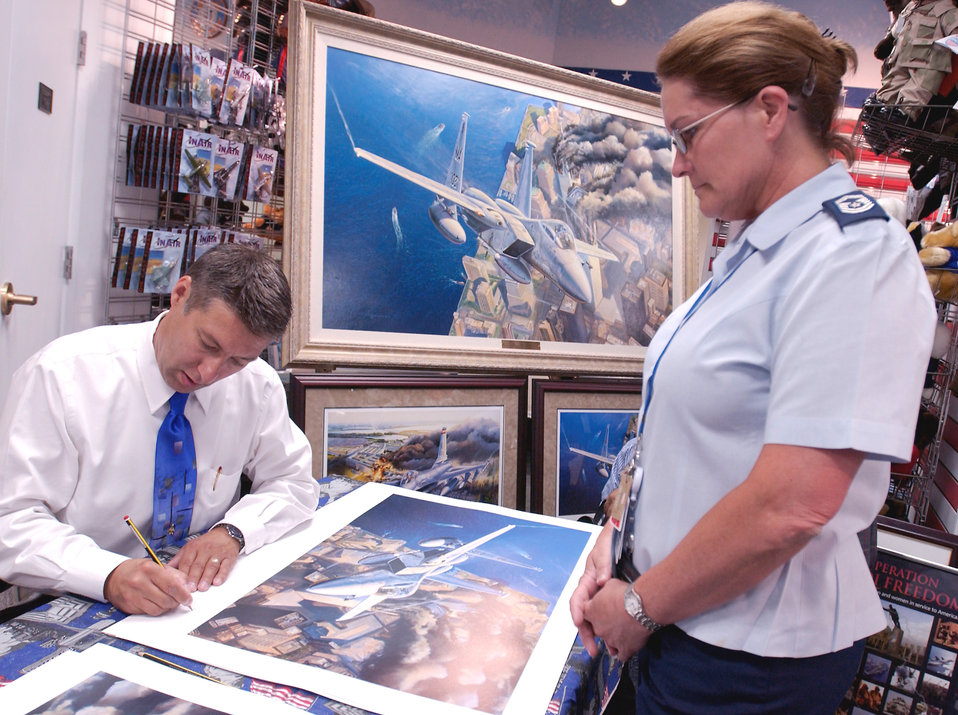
Ground Zero, Eagles on Station

WASHINGTON -- Senior Master Sgt. Karla Taylor (right) watches artist Rick Herter sign a print of his original oil painting